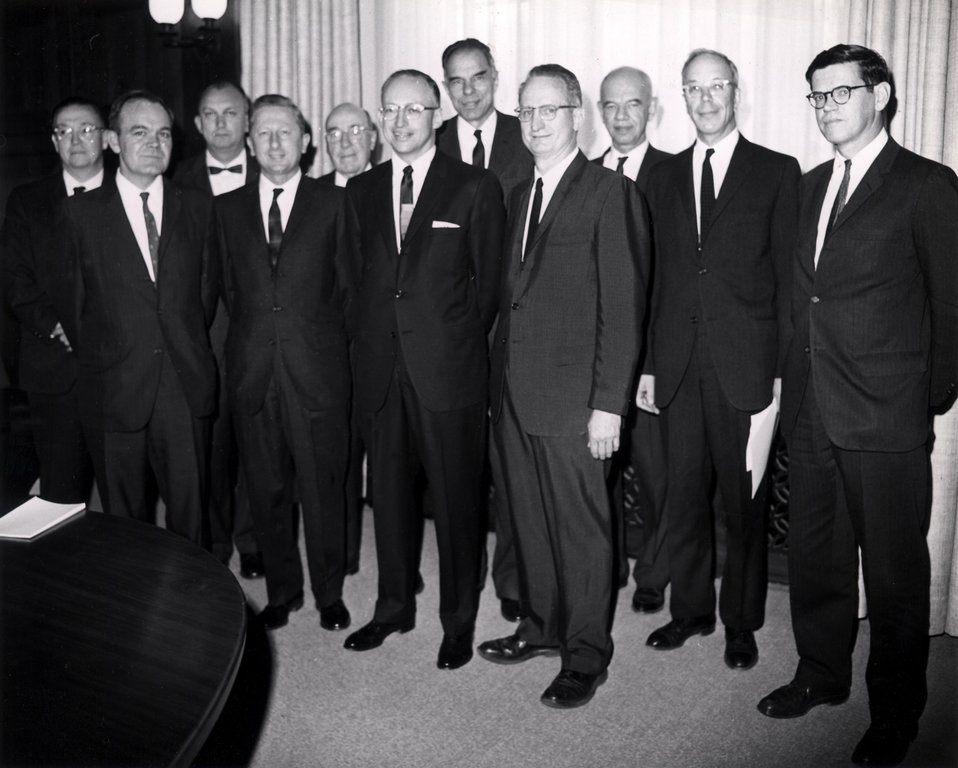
Lawrence Award Ceremony, 1963. Kouts, Tobias, Rosen, Taub, Rainwater and Seaborg.